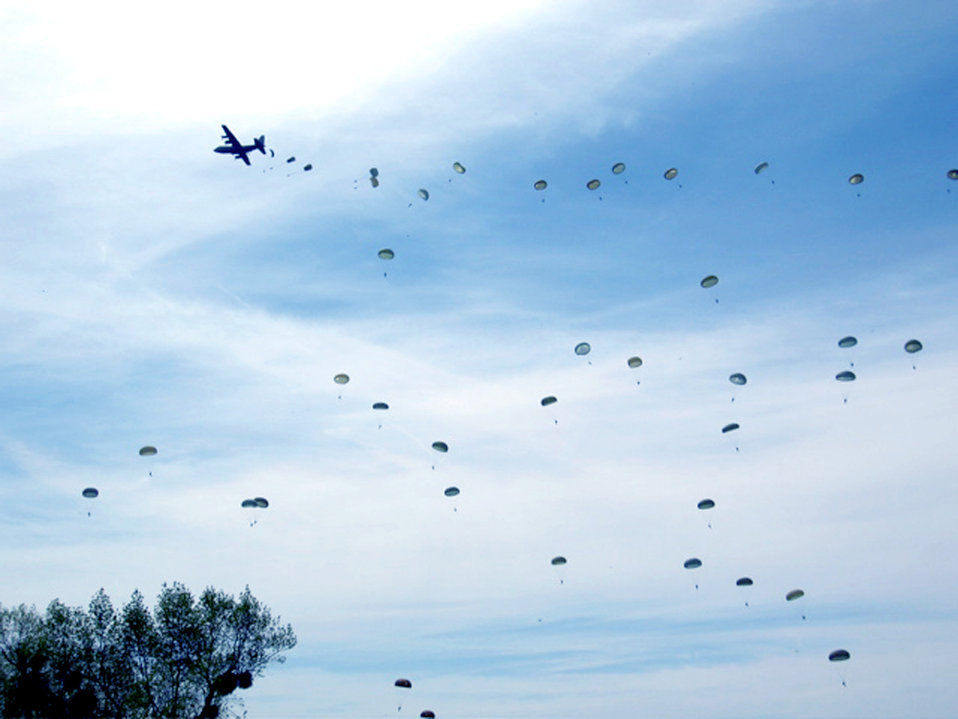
Parachute drop brings appreciation for freedom

Paratroopers jump out of a C-130 Hercules as part of observances for the 62nd anniversary of D-Day in Normandy, France, on June 4. The paratroopers were a combined force from the U.S., Canada, France, Britain and Germany participating in Operation Airdrop Warrior 2006. The airdrop event was held two days before the actual anniversary.